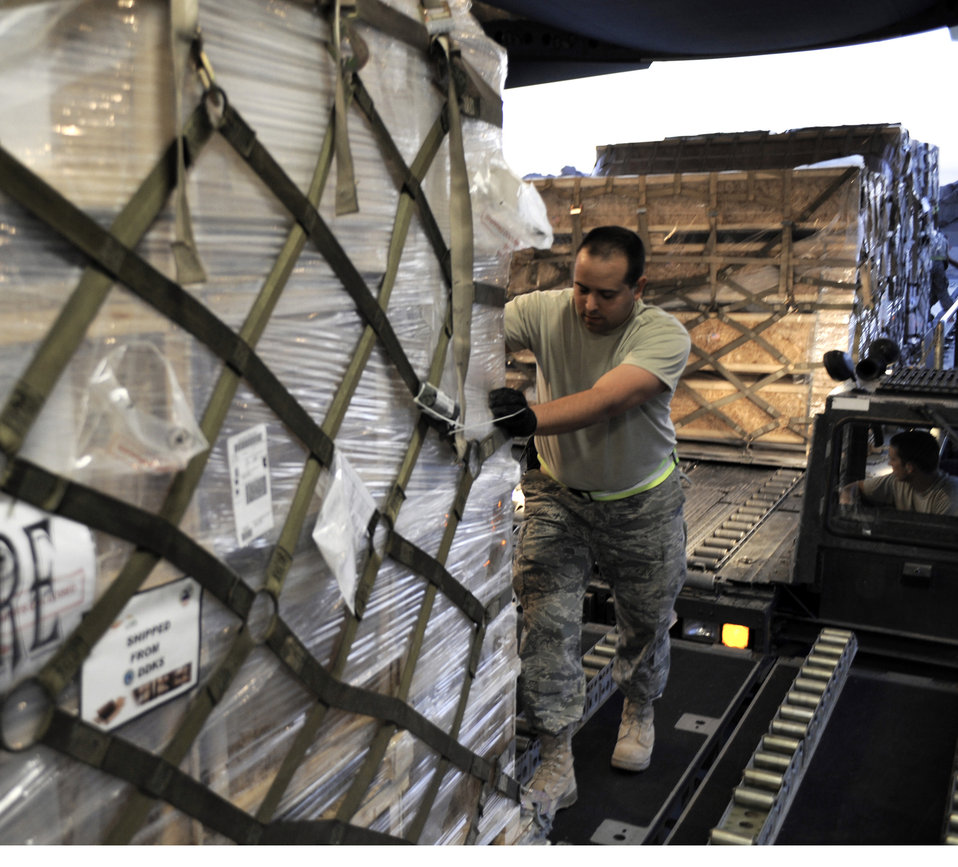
U.S. airlift aids Pakistan's war-torn Swat Valley

Master Sgt. Thomas J. Kondziella loads a pallet containing humanitarian relief supplies destined for Pakistan into the cargo bay of a C-17 Globemaster III May 20 at an air base in Southwest Asia.